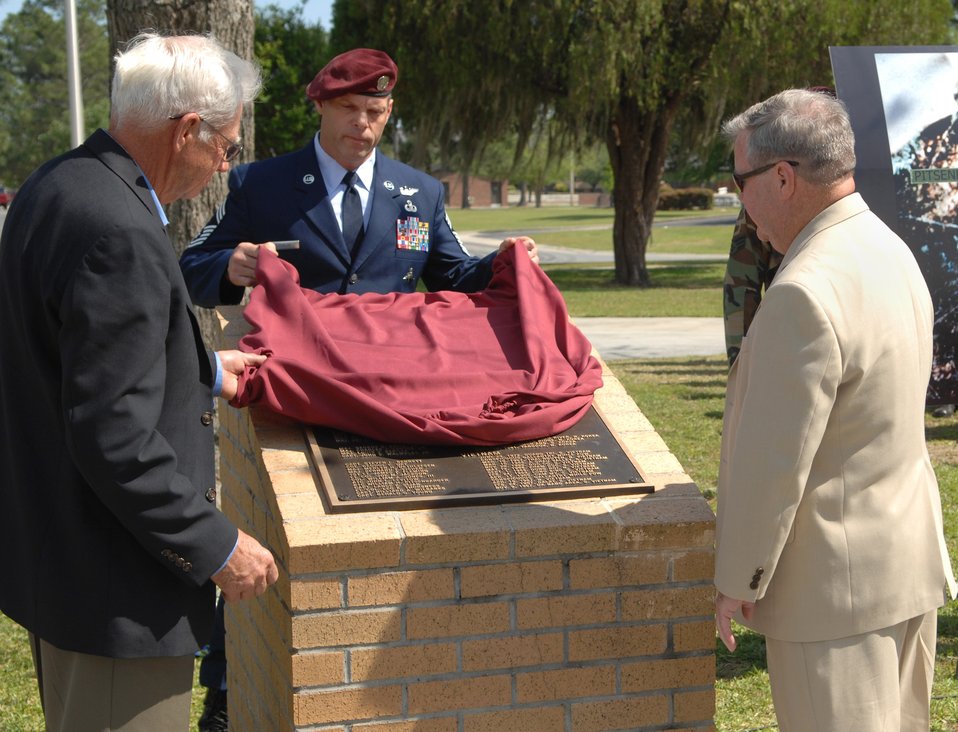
Pitsenbarger re-honored at Moody after 42 years

Chief Master Sgt. Brian Douglas unveils the monument with retired Chief Master Sgt. Dave Milster and retired Lt. Col. Harry Obeirne, dedicated to the men and women in the Air Force who were recipients of the Medal of Honor at Moody Air Force Base, Ga., April 18. Colonel Obeirne participated in the recovery of the body of Airman 1st Class William Pitsenbarger, after his death. Chief Milster, a pararesuceman, participated in Airman Pitsenbarger's final mission in Vietnam April 11, 1966. Chief Douglas is the 38th Rescue Squadron superintendent.